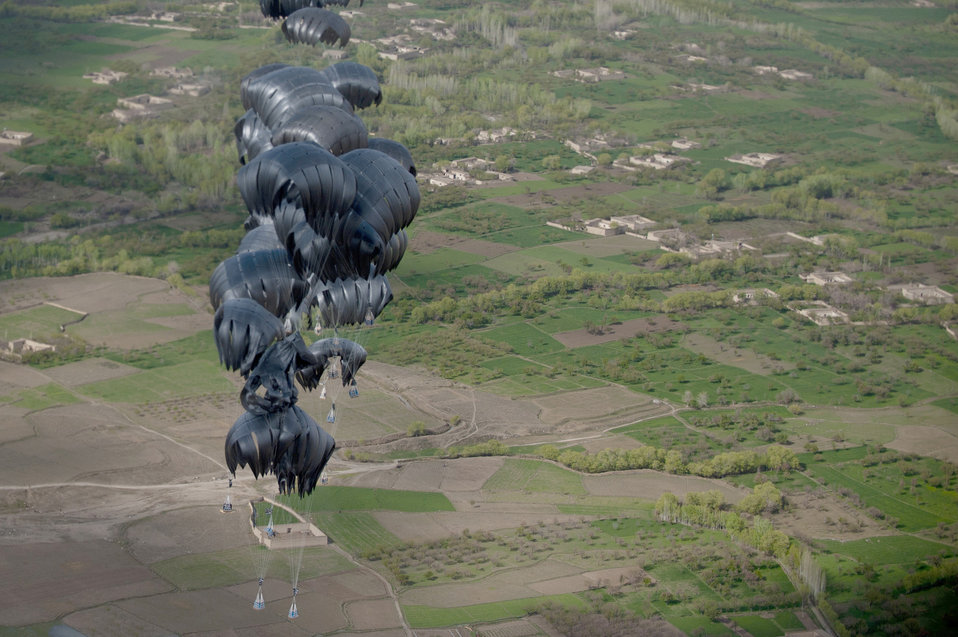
Air delivery mission

Aerial delivery cargo drops April 15, 2011, above Afghanistan.